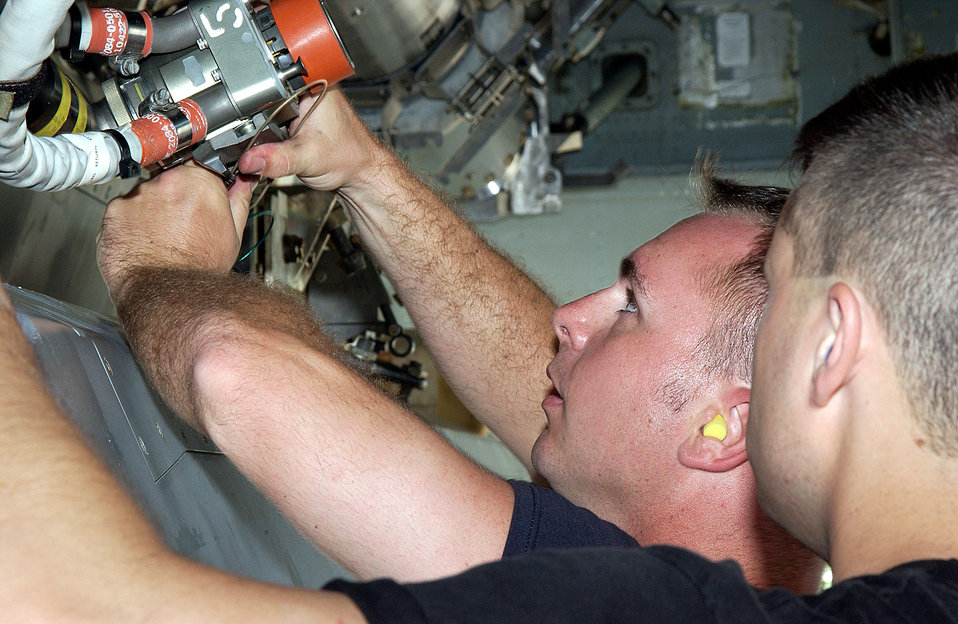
Load crew

ANDERSEN AIR FORCE BASE, Guam -- Staff Sgts. John Beldin and Landon Favors, B-52 Stratofortress weapons loaders, prepare an air-launched cruise missle for loading on a B-52 here March 20. Aircraft and support troops from the 2nd Bomb Wing at Barksdale Air Force Base, La., are deployed as part of the 7th Air Expeditionary Wing.